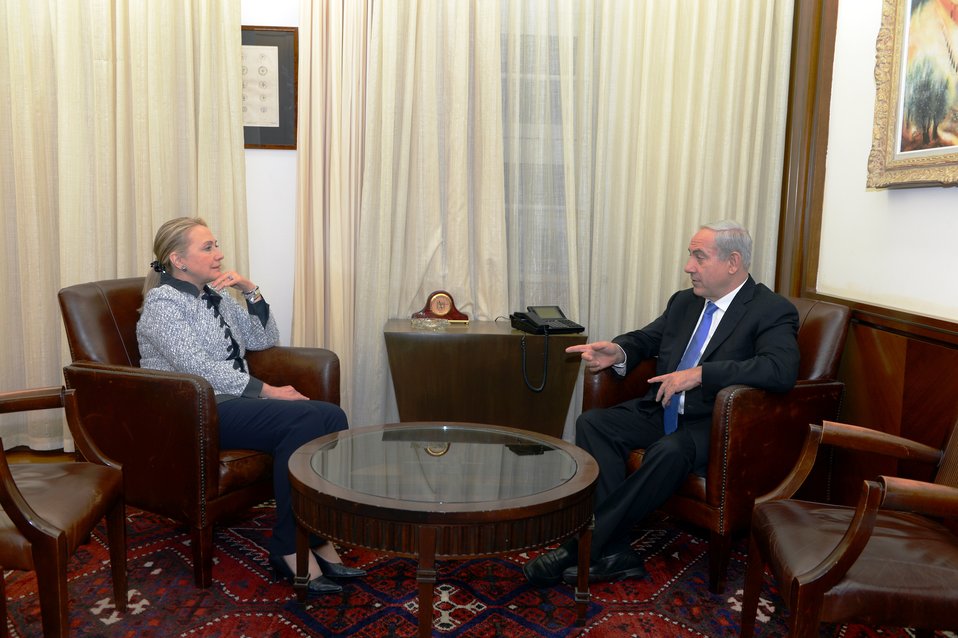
Secretary Clinton Meets With Israeli Prime Minister Netanyahu

U.S. Secretary of State Hillary Rodham Clinton meets with Israeli Prime Minister Benjamin Netanyahu at the Prime Minister’s office in Jerusalem, November 20, 2012.